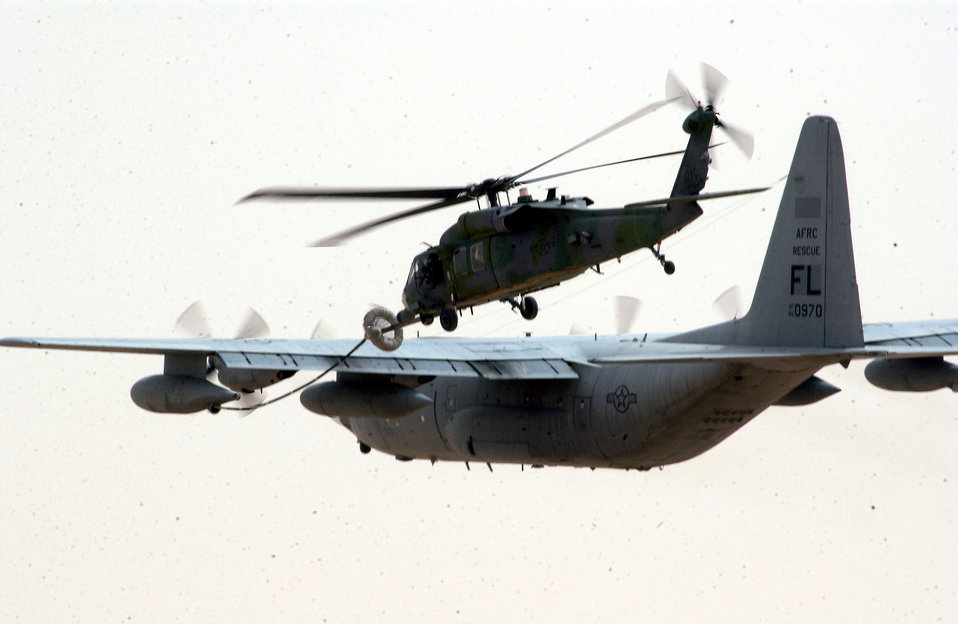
Thirsty Pave hawk

OPERATION IRAQI FREEDOM -- A Special Operations HH-60G Pave Hawk and C-130 Hercules from the 301st Rescue Squadron conduct an aerial refueling April 6 at a forward deployed location in southern Iraq during Operation Iraqi Freedom. Operation Iraqi Freedom is multi-national coalition effort to liberate the Iraqi people, eliminate Iraq's weapons of mass destruction and bring an end to the regime of Saddam Hussein.